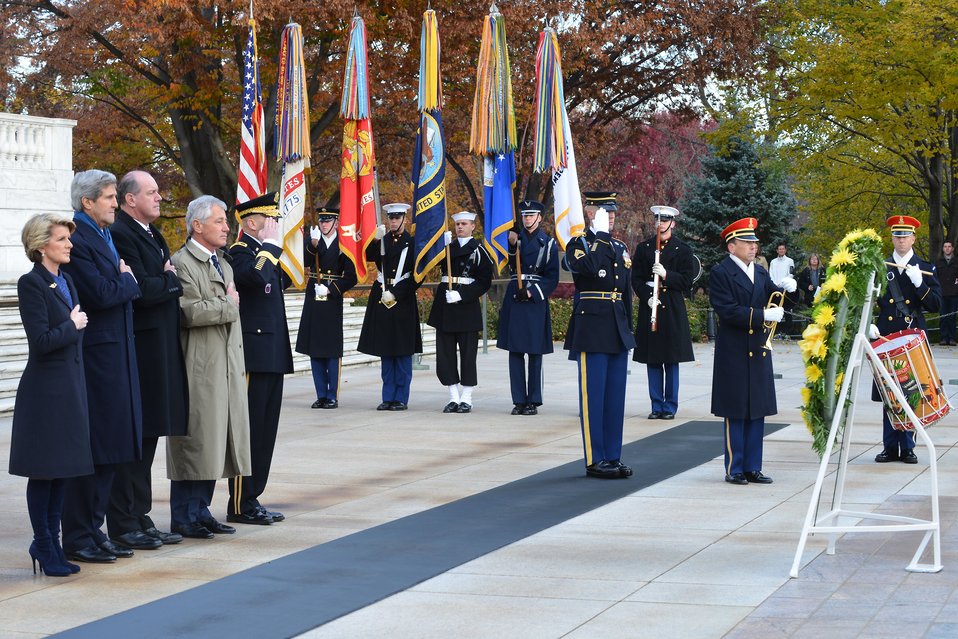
Secretaries Kerry, Hagel and Australian Ministers Bishop, Johnston Participate in a Wreath Laying Ceremony

U.S. Secretary of State John Kerry, U.S. Secretary of Defense Chuck Hagel, Australian Foreign Minister Julie Bishop, and Australian Defence Minister David Johnston participate in a wreath laying ceremony at the Tomb of Unknown Soldier at Arlington National Cemetery in Arlington, Virginia, on November 20, 2013.